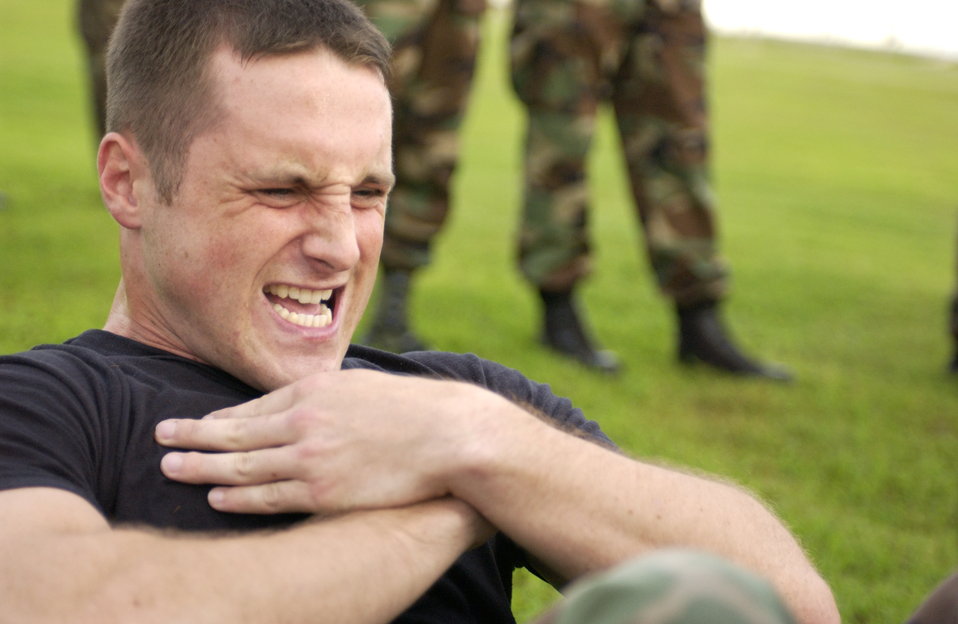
Don't give up

ANDERSEN AIR FORCE BASE, GUAM -- Senior Airman Ryan Hill fights the pain of sit-ups during the Team Andersen Challenge here. Team Andersen challenge is a quarterly moral and readiness building event where participants compete in an obstacle course, knowledge bowl and a 1.5 mile run. Airman Ryan is assigned to the 36th Services Squadron.